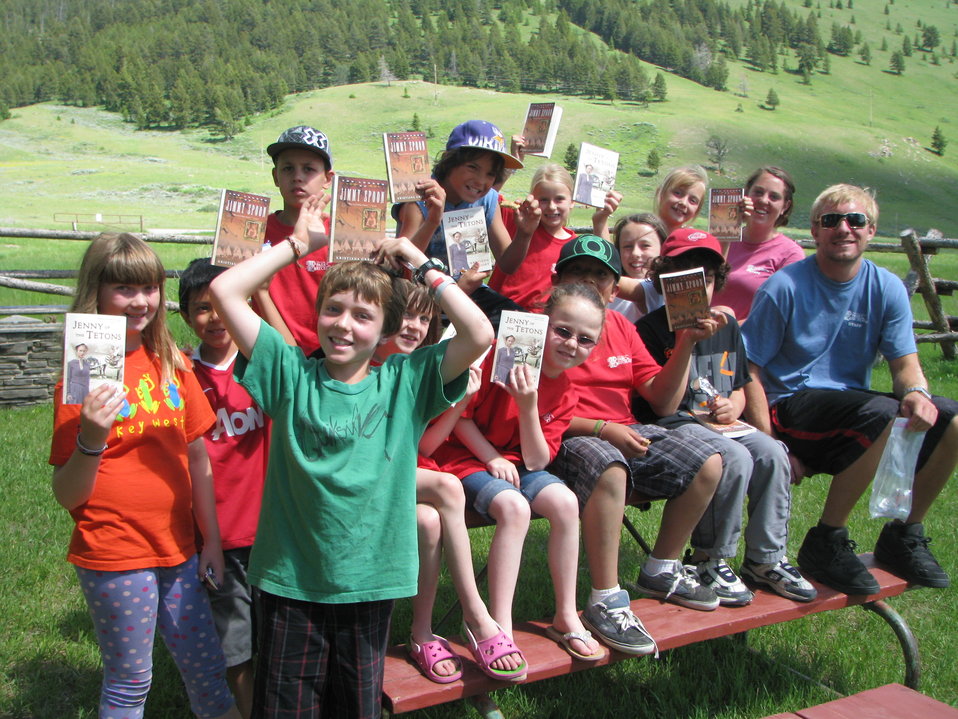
Wrapping Up a History Lesson

Children in the Teton County Parks & Recreation Department's Camp Jackson Adventurer's Club pose with copies of a souvenir book they received after spending an afternoon on the National Elk Refuge learning about homesteading.